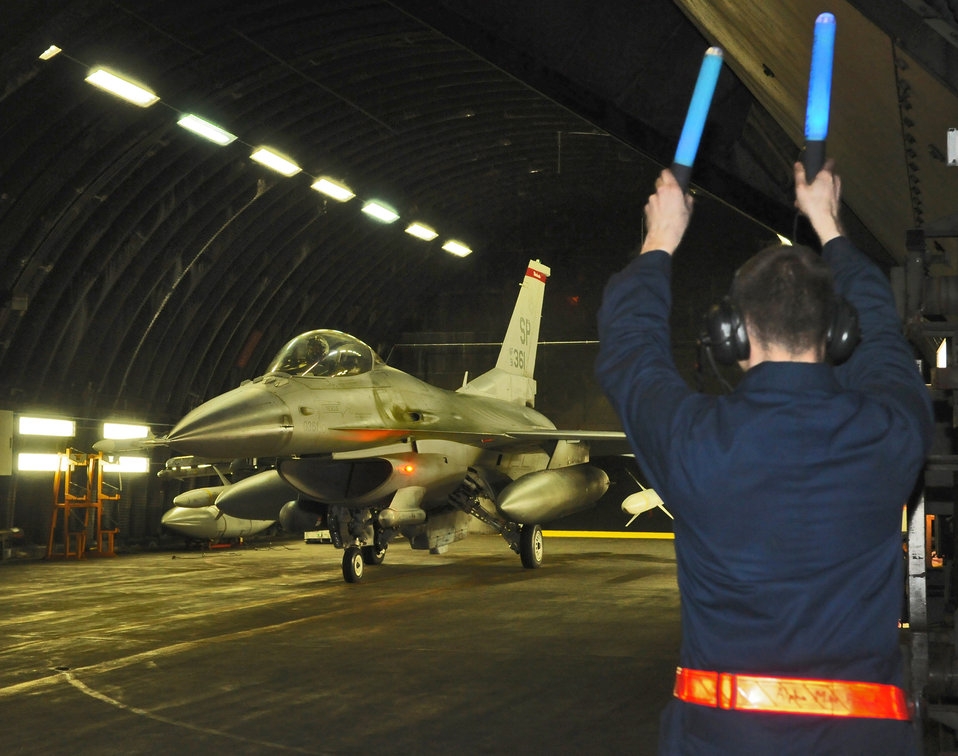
Operation Odyssey Dawn

SPANGDAHLEM AIR BASE, Germany ? A crew chief from the 52nd Aircraft Maintenance Squadron marshals an F-16 Fighting Falcon out of a hardened aircraft shelter here in support of Operation Odyssey Dawn March 20. Joint Task Force Odyssey Dawn is the U.S. Africa Command task force established to provide operational and tactical command and control of U.S. military forces supporting the international response to the unrest in Libya and enforcement of United Nations Security Council Resolution (UNSCR) 1973. UNSCR 1973 authorizes all necessary measures to protect civilians in Libya under threat of attack by Qadhafi regime forces. JTF Odyssey Dawn is commanded by U.S. Navy Admiral Samuel J. Locklear, III.